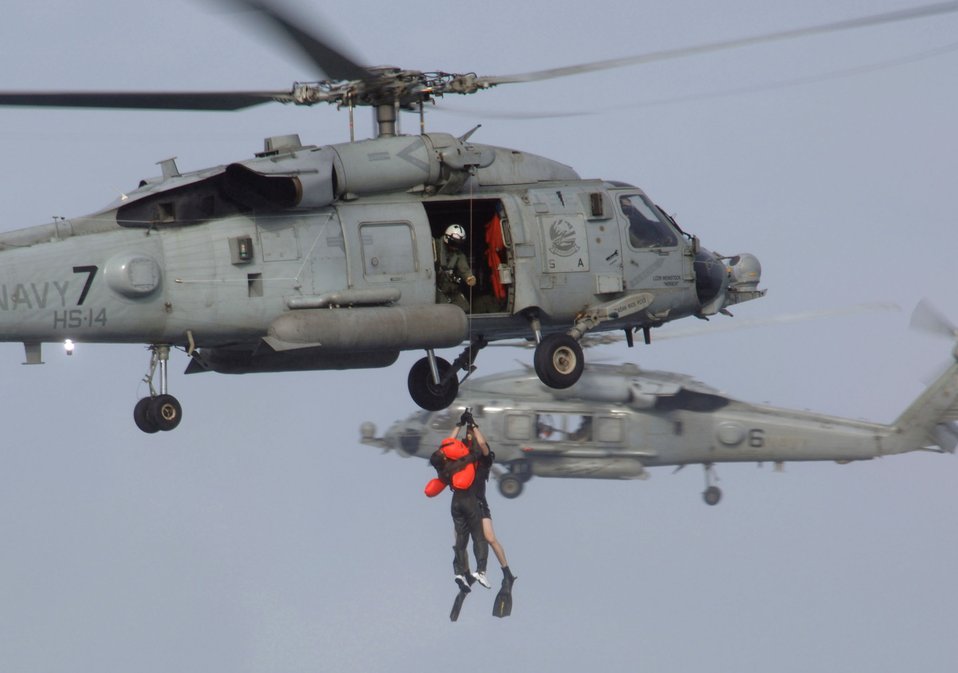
Rescue me

KADENA AIR BASE, Japan -- Tech. Sgt. Dawn Ryan is hoisted by a Navy HH-60G Pave Hawk helicopter from the aircraft carrier USS Kitty Hawk during water mass casualty training. The exercise provides the opportunity for Airmen and Sailors to work together in a maritime environment. Sergeant Ryan is assigned to the 18th Aeromedical Evacuation Squadron here.